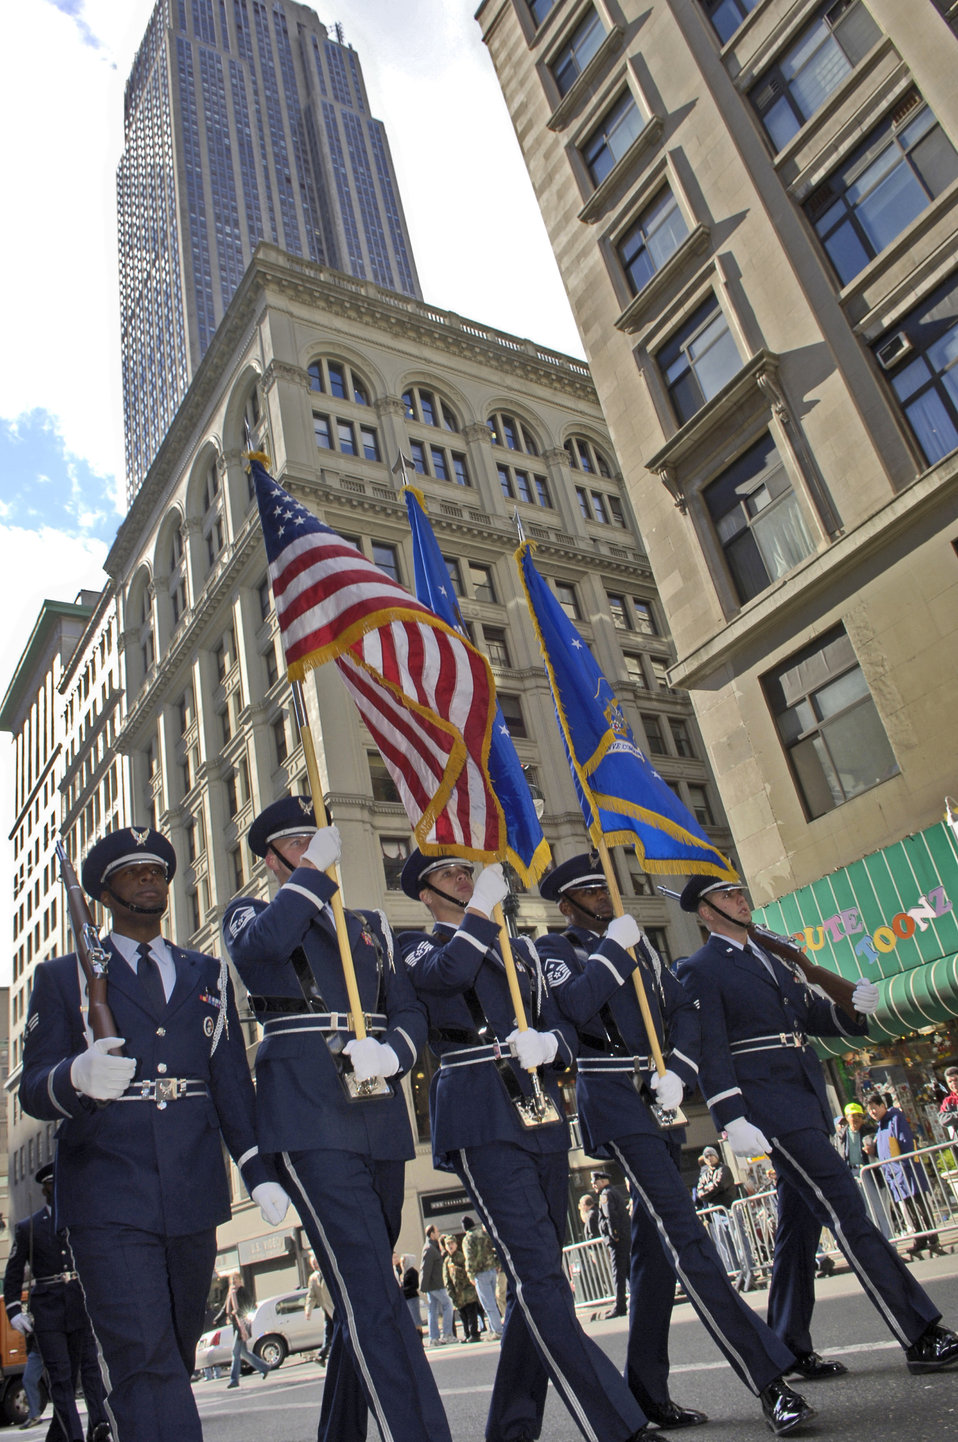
Marching on

NEW YORK (AFPN) -- Airmen with the 514th Air Mobility Wing elite honor guard from McGuire Air Force Base, N.J., march down 5th Ave. in the 87th annual New York City Veterans Day Parade.